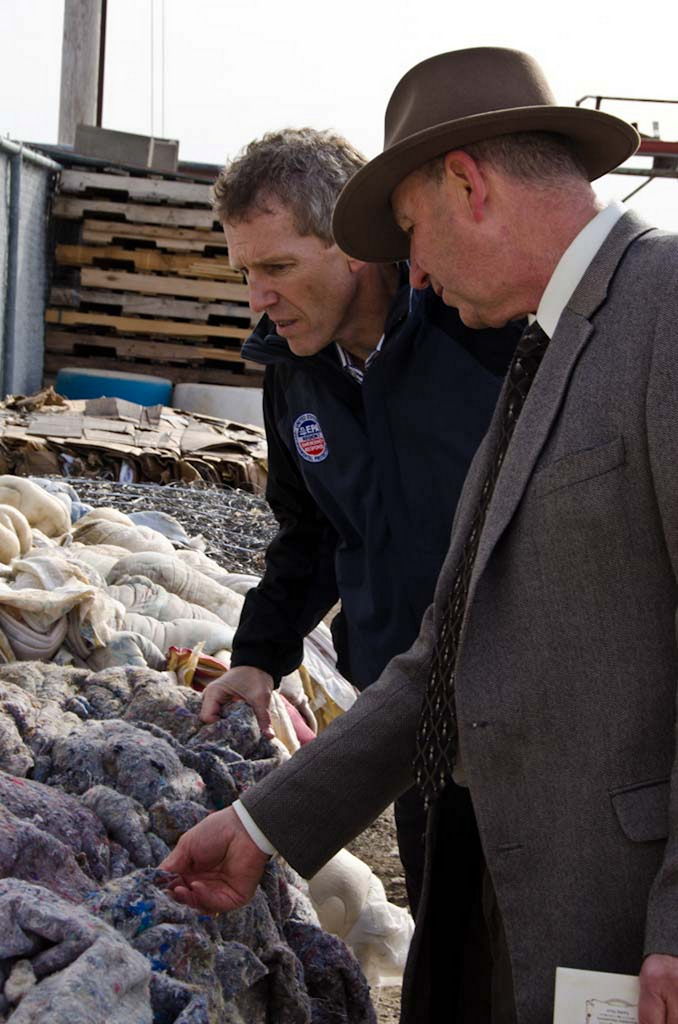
January 18, 2012 EPA Region 7 Administrator Karl Brooks, joins Warden Sam Cline for mattress recycling event

Examining material removed from a mattress for recycling on January 18, 2012.

Cotton and bed springs from the mattresses are baled and sent off site. The wood is used to create furniture and the mattress material is used to make quilts. The facility was honored by EPA for reducing its volume of solid waste through innovative and aggressive recycling programs. EPA presented a WasteWise State Government Partner of the Year Award to the correctional facility on January 18, 2012.

In photo from left to right: EPA Region 7 Administrator Karl Brooks and Hutchinson, Kan., Correctional Facility Warden Sam Cline.

EPA Region 7 more locally serves Iowa, Kansas, Missouri, Nebraska and nine tribal nations.